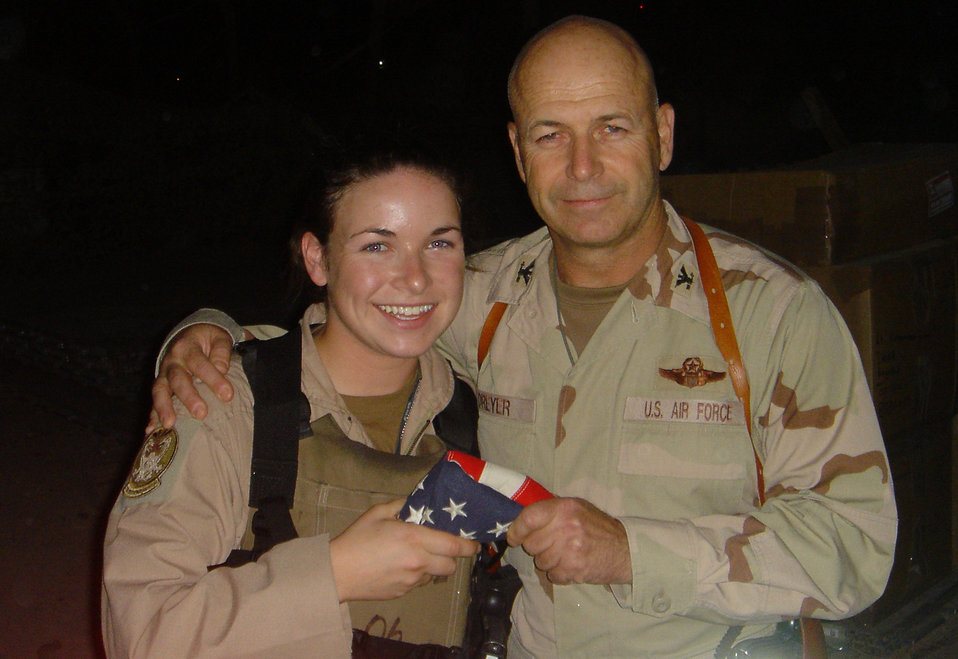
Father passes flag to daughter in Iraq

Col. Steven Dreyer, 4th Expeditionary Air Support Operations Group commander at Camp Victory, Iraq, presents his youngest daughter, 1st Lt. Kathrine Dreyer, 777th Expeditionary Airlift Squadron at Balad Air Base, Iraq, with the family flag. Lieutenant Dreyer is a C-130 Hercules navigator deployed from the 50th Airlift Squadron at Little Rock Air Force Base, Ark.